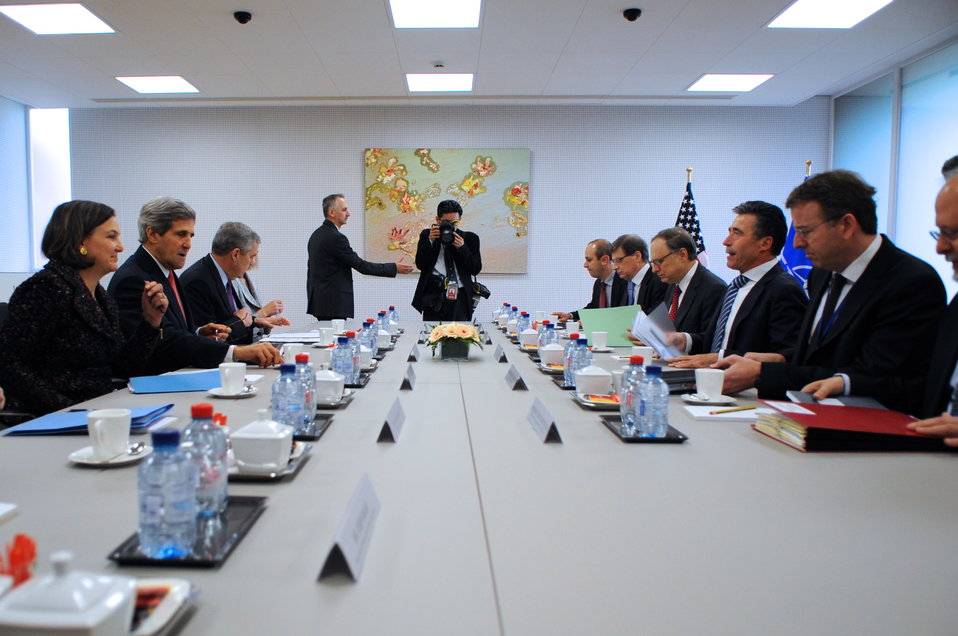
Secretary Kerry Meets with Secretary General Rasmussen

U.S. Secretary of State John Kerry chats with NATO Secretary General Anders Fogh Rasmussen during a bilateral discussion preceding a NATO Ministerial meeting in Brussels, Belgium, on December 3, 2013.